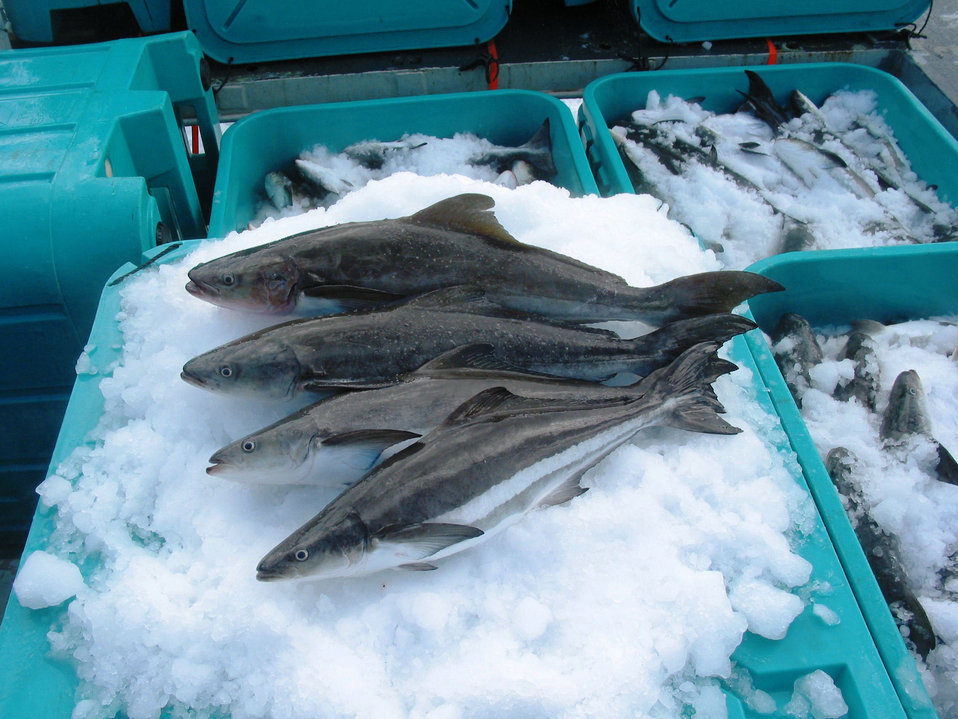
Cobia (Rachycentron canadum) harvested from a fish farm.